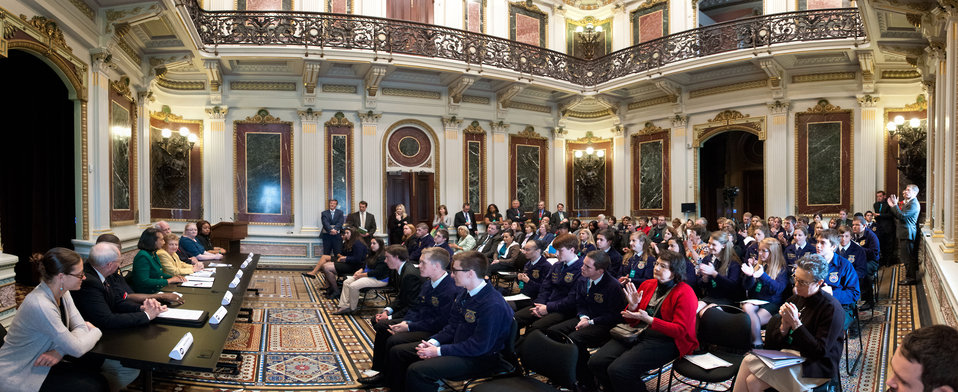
(Virtual panorama) The Mentors/Educators Champions of Change Panel of FFA and 4-H members complete their presentations to a round of applause, during the Champions of Change Recognition event, in the Indian Treaty Room of the Executive Office Building in Washington, D.C. on Tuesday, Oct. 9, 2012. The Champions of Change program was created to honor ordinary Americans doing great work in their communities. Each week, a different sector is highlighted and groups of Champions, ranging from educators, entrepreneurs and community leaders, are recognized for the work they are doing to serve and strengthen their communities. The Indian Treaty Room, originally the Navy's library and reception room has rich marble wall panels, tiled floors, 800-pound bronze sconces, and gold leaf ornamentation.